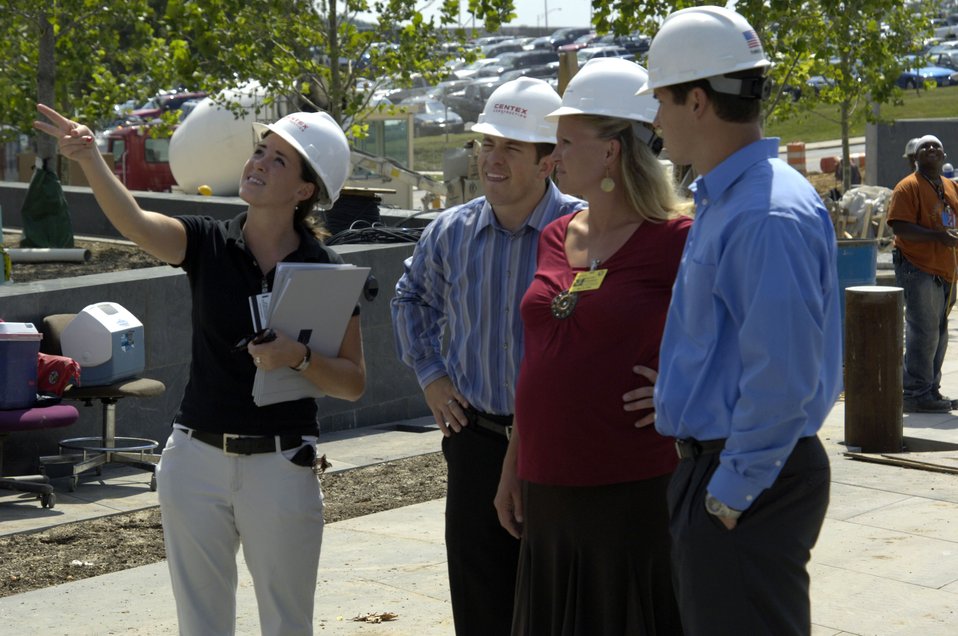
'Treasure Hunters' meet Air Force leaders

Team Air Force from the